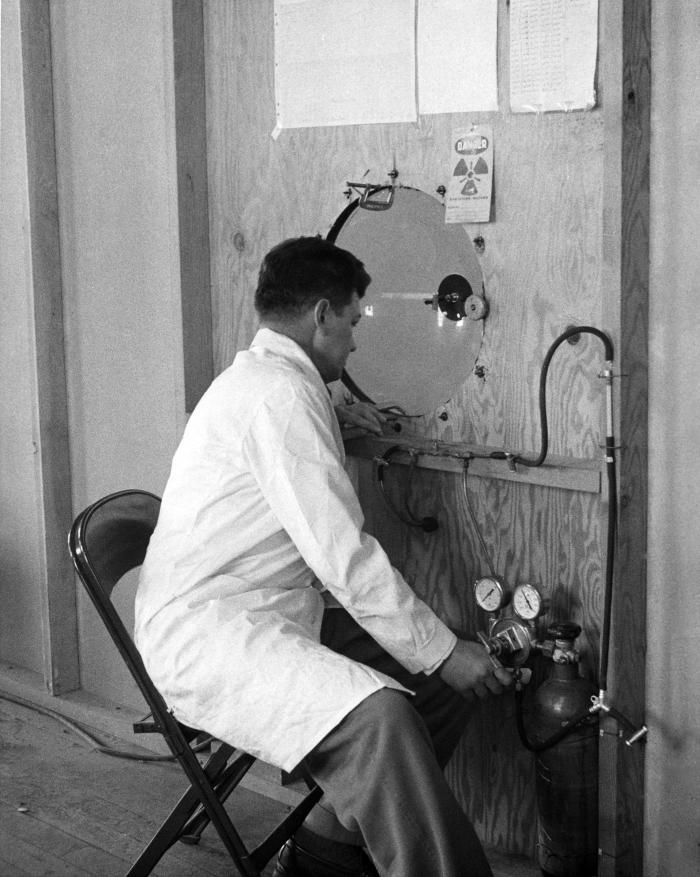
This historic image, provided by the Center for Disease Control's (CDC), National Institute for Occupational Safety and Health (NIOSH), depicted a technician wearing a white lab coat seated at a simulated uranium mine workstation. This test center was located at a Salt Lake City, UT, Public Health Service (PHS), Rockefeller Foundation, International Health Division (IHD) field station. As he was observing what was transpiring behind a wooden wall through a circular portal, the technician's right hand was adjusting a valve on a small compressed-gas tank. Not knowing the level of contaminants produced, and expelled from the simulated workstation, wearing only a white coat, may, or may not have been what today would be deemed adequate protection against contamination. See PHIL 9582 for a similar view of this scenario.